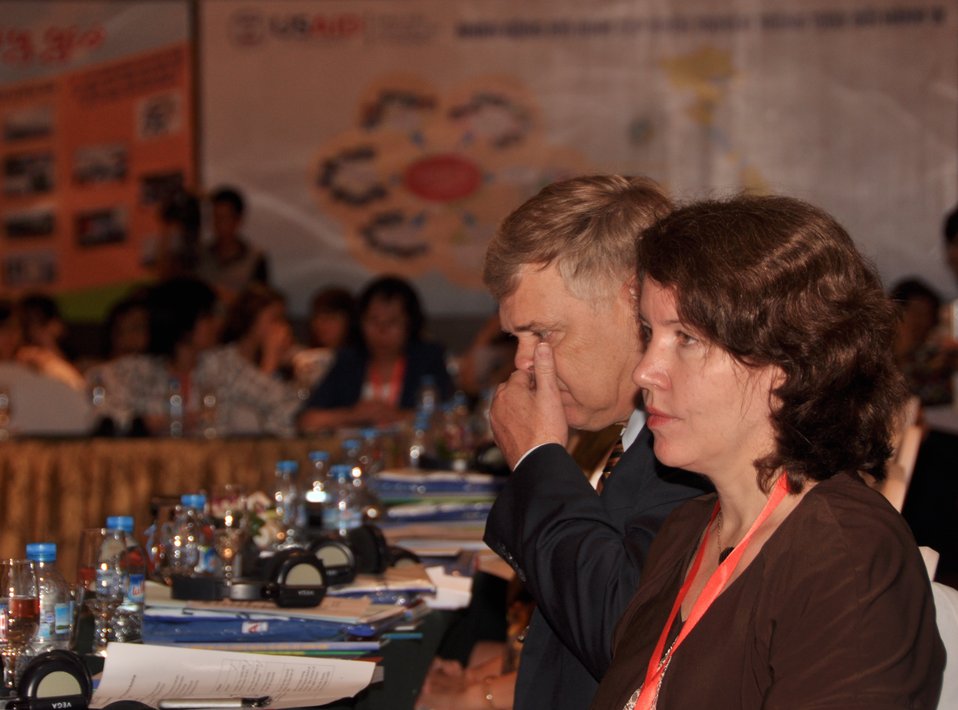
USAID Avian and Pandemic Influenza Initiative Dissemination Workshop

Dissemination Workshop
Hanoi, August 6, 2013.